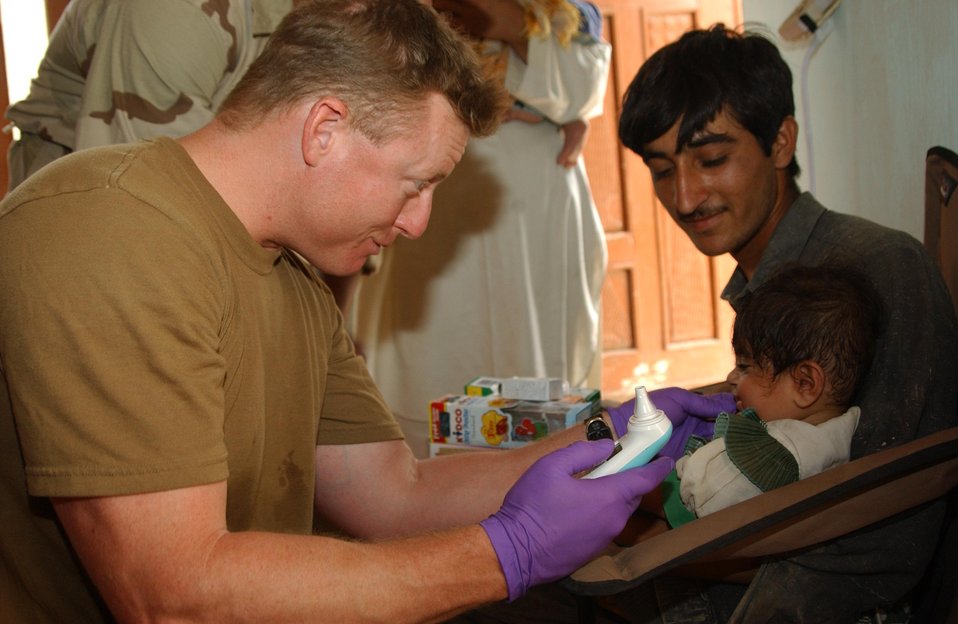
SFC Vincent, a Special Forces Medic with E Co, 96th CA BN treats an Afghan infant during a humanitarian assistance operation in Afghanistan 2004.